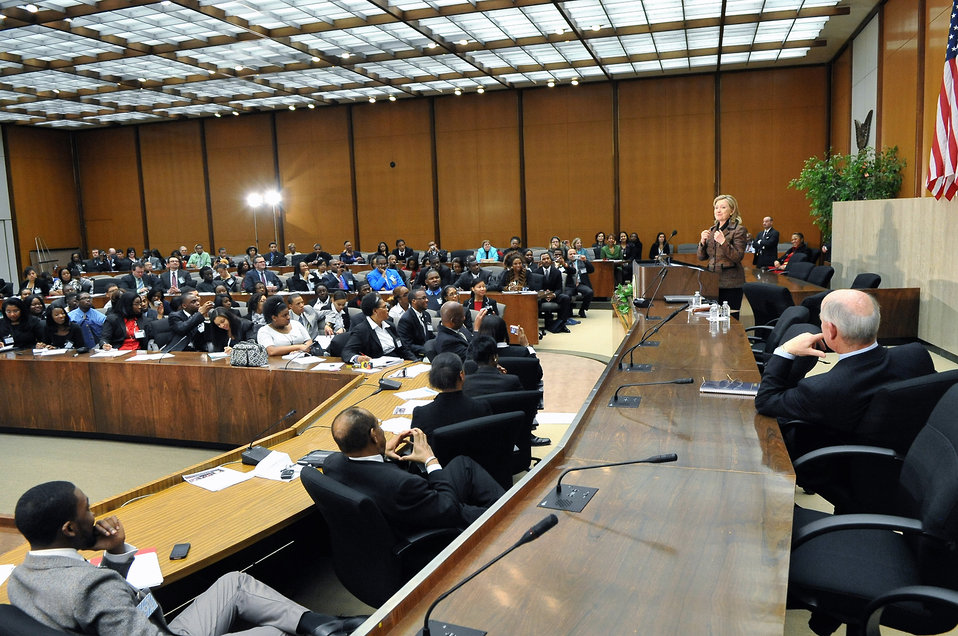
Assistant Secretary Clinton Looks on as Secretary Clinton Speaks

U.S. Assistant Secretary of State for Public Affairs Philip J. Crowley looks on as U.S. Secretary of State Hillary Rodham Clinton delivers remarks at a U.S. Foreign Policy Briefing for students from Historically Black Colleges and Universities in the Loy Henderson Auditorium at the U.S. Department of State in Washington, D.C., on February 23, 2011.